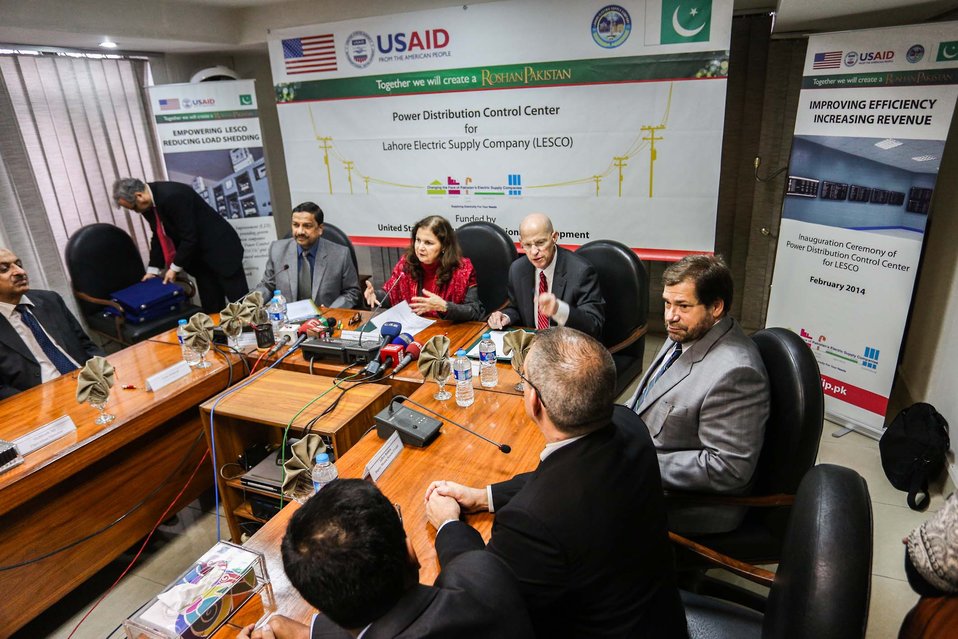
U.S. Improves LESCO’s Capacity to Reduce Load-Shedding

“This project will provide real-time access to electricity load data to managers of Pakistan’s electricity grid and help LESCO overcome unscheduled load-shedding,” said Consul General Fite. “The U.S. Government and the American people are committed to assisting the Government of Pakistan to improve the power distribution system throughout Pakistan. We partner with power distribution companies to improve their operations, reduce losses, and ultimately make sure that the Pakistani people have a more reliable power supply.”